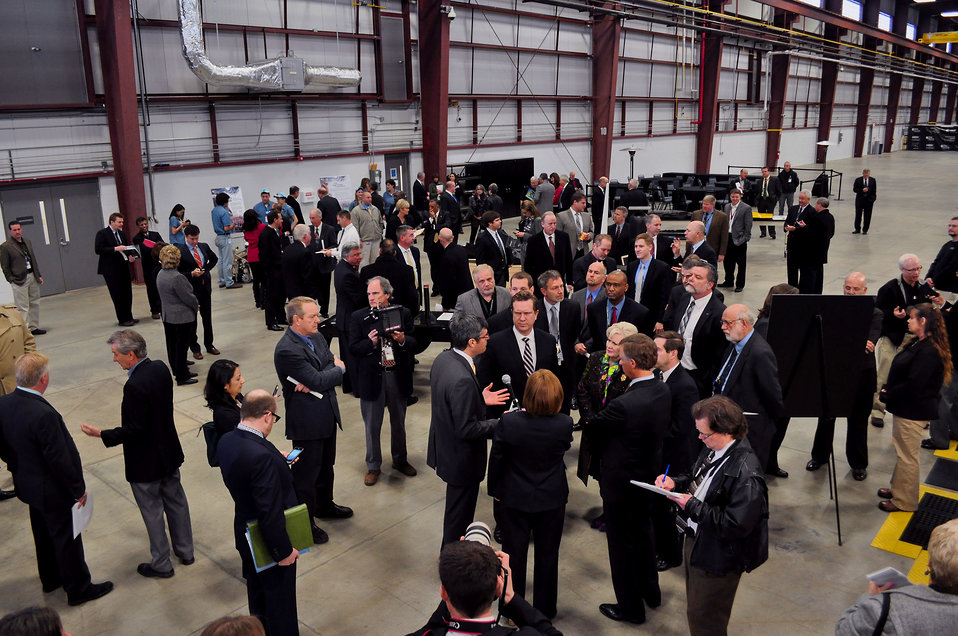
Carbon Fiber Technology Facilty Open House Oak Ridge Tennessee

13-025 DOE photo Lynn Freeny